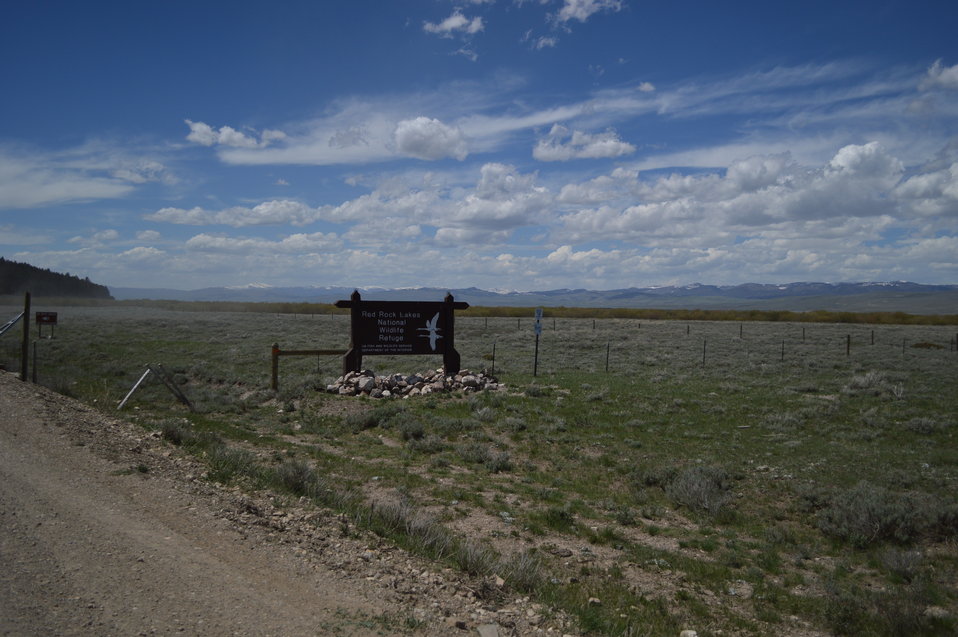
Regional Leadership Visit to Montana 2014